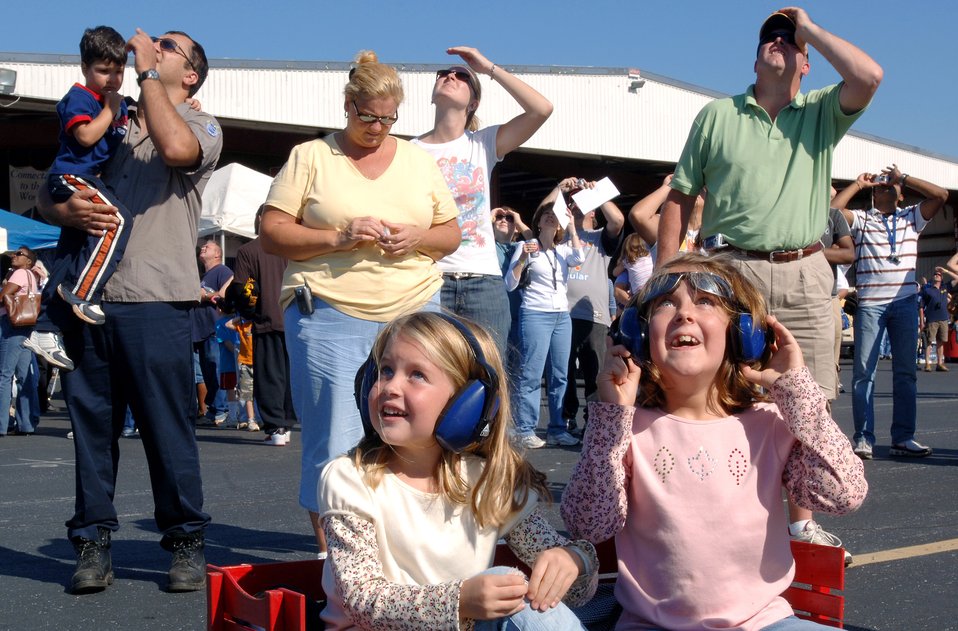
Air Force Week Atlanta wraps up

Spectators of the Great Georgia Air Show enjoy aerial demonstrations during Air Force Week Atlanta Oct. 13 at Falcon Field in Peachtree City, Ga. Atlanta is one of six cities throughout the country chosen to host an Air Force Week. The theme for the year is